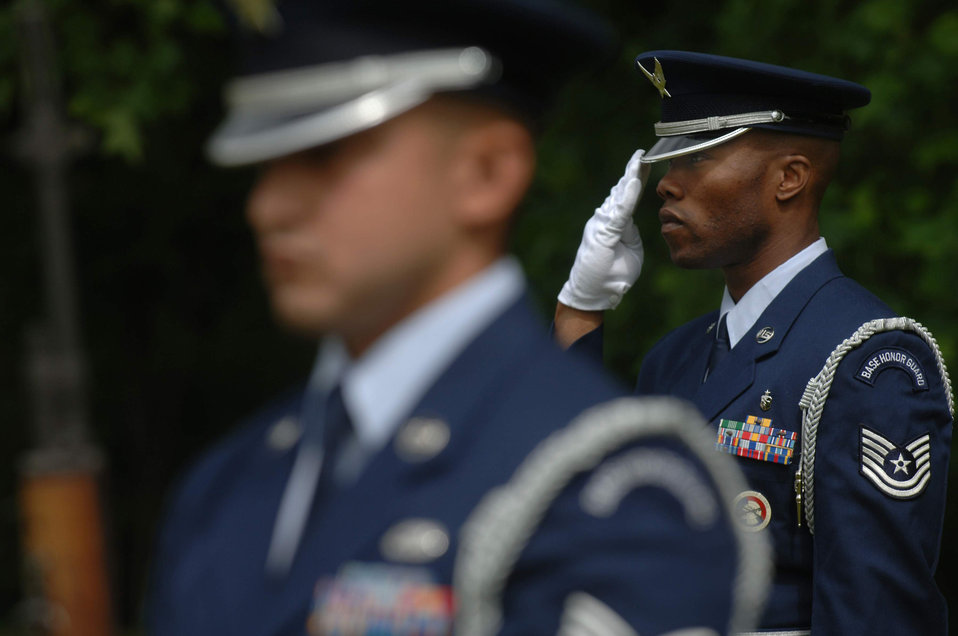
America's first combat aviators memorialized

Tech. Sgt. Michael Gordon and Senior Airman Anthony Albgria were joined by more than a dozen Ramstein Honor Guard members who helped officiate the annual Lafayette Escadrille Memorial ceremony outside of Paris May 23.